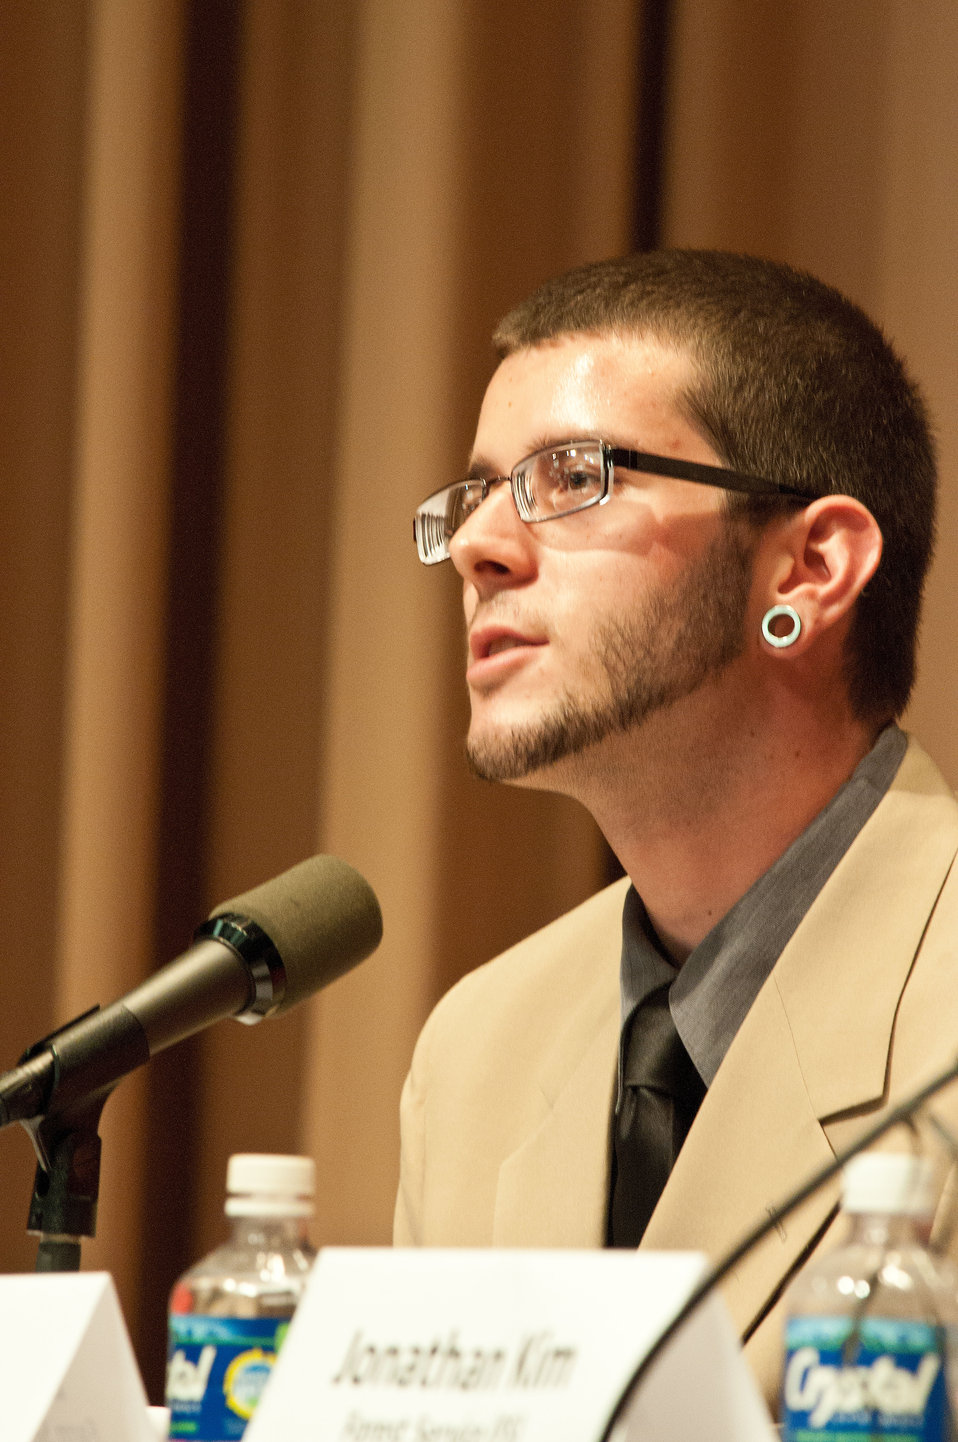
Robert Bruton, Agricultural Research Service (ARS) intern and panel member answers questions from the audience at the United States Department of Agriculture (USDA) Intern Day and Panel Discussion, Transforming USDA’S Tomorrow Today” in Washington, D.C., on Wednesday, July 11, 2012.